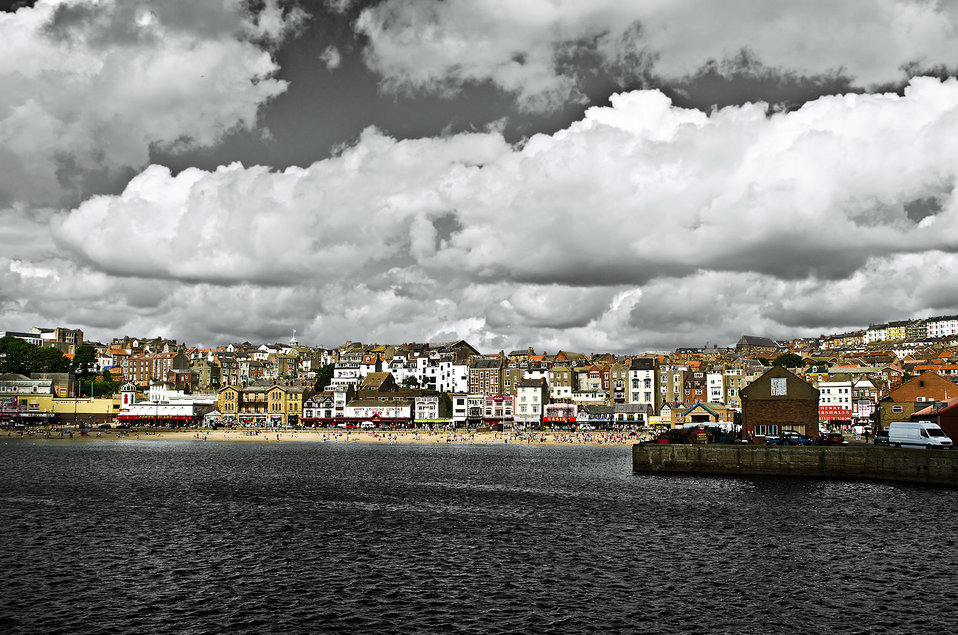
In captivity nature.